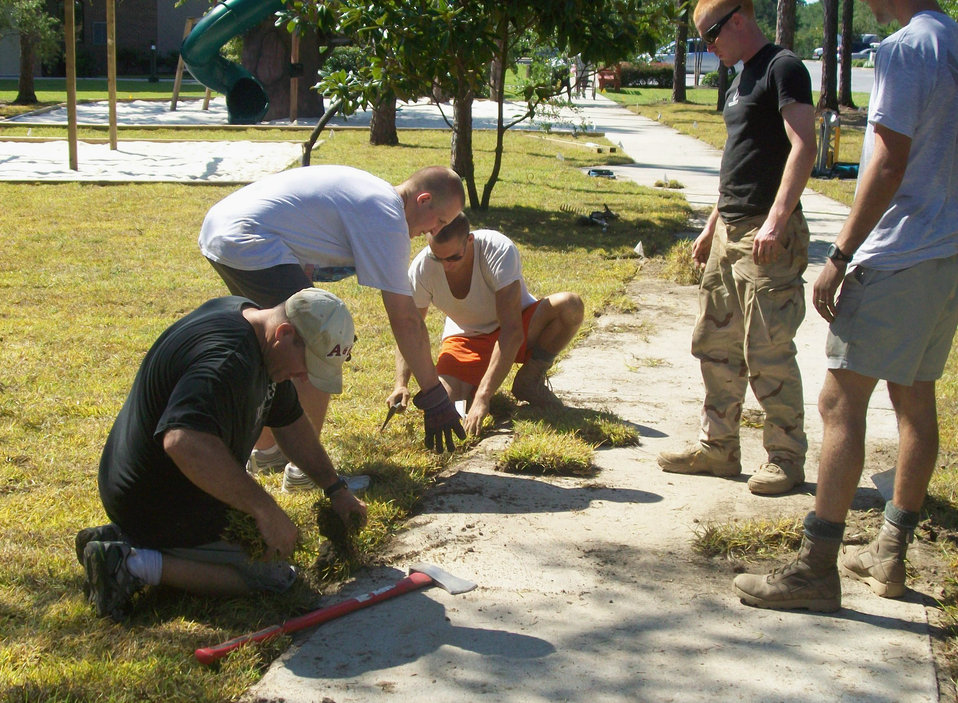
TACP park

Tactical Air Control Party Airmen from Hurlburt Field, Fla. work together to build a park Sept. 5, 2010 for the Air Force Enlisted Village located in Shalimar, Fla.